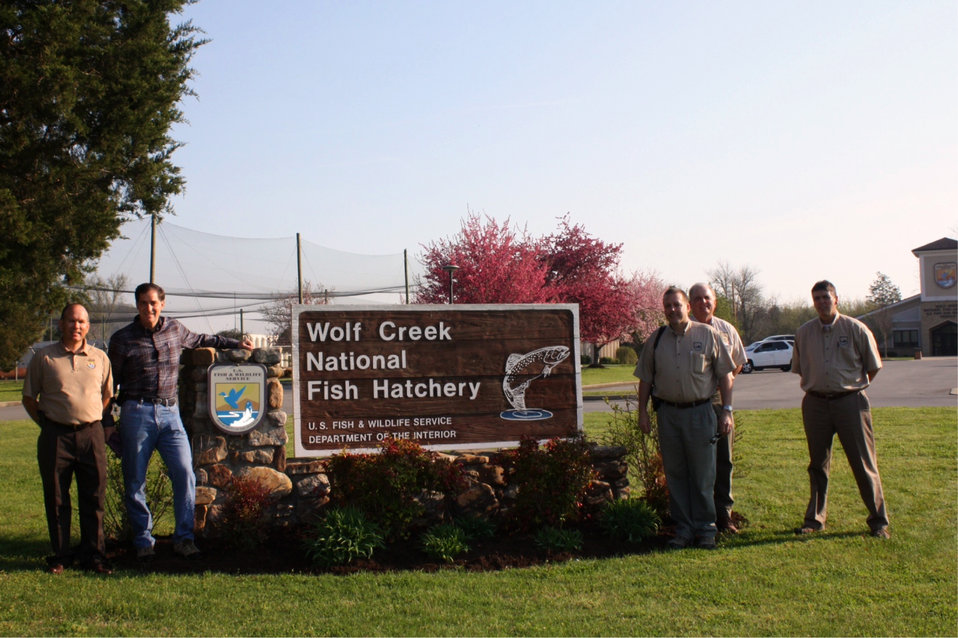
Dan Ashe visits Wolf Creek National Fish Hatchery

Project Leader James Gray, Director Ashe, KDFWR Commissioner Jon Gassett, KDFWR Deputy Commissioner Benjy Kinman, KDFWR Fisheries Director Ron Brooks.